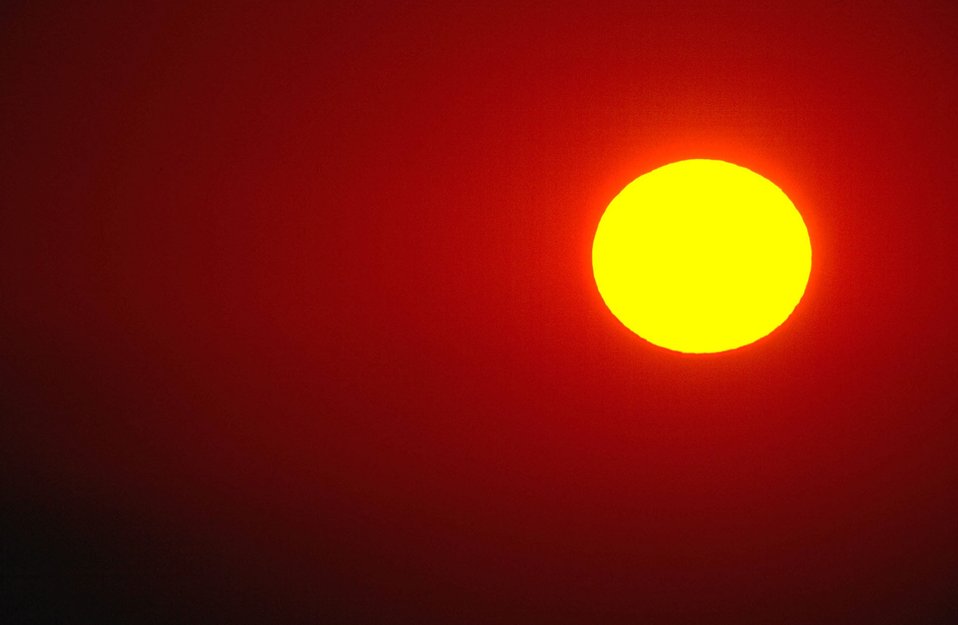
Sunrise over North Ridge in Fort Meade